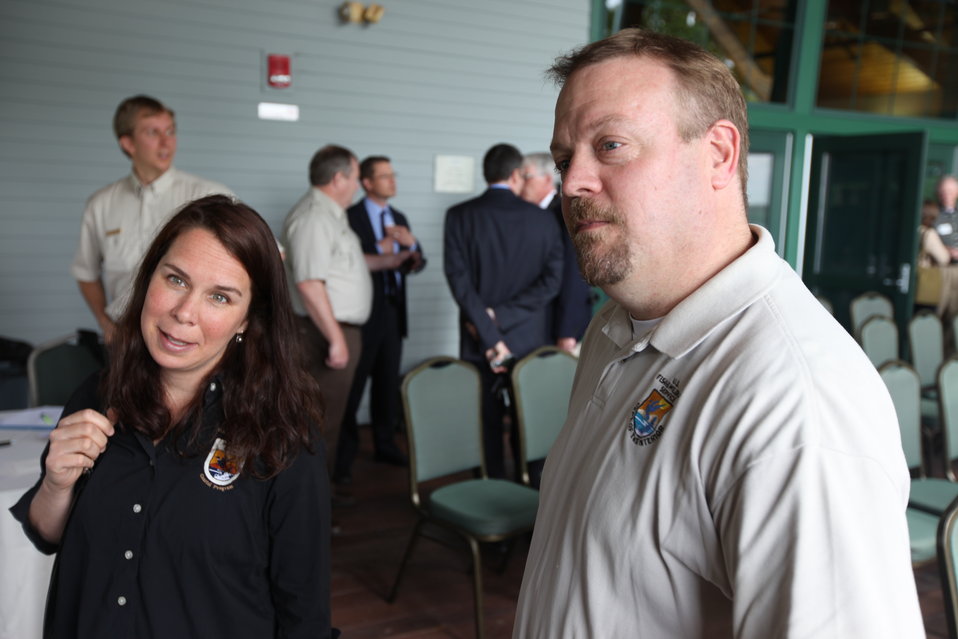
Scott Kahan & Sharon Marino from Refuges

Scott Kahan Northeast Chief of the National Wildlife Refuge System and Sharon Marino from the U.S. Fish & Wildlife Service.